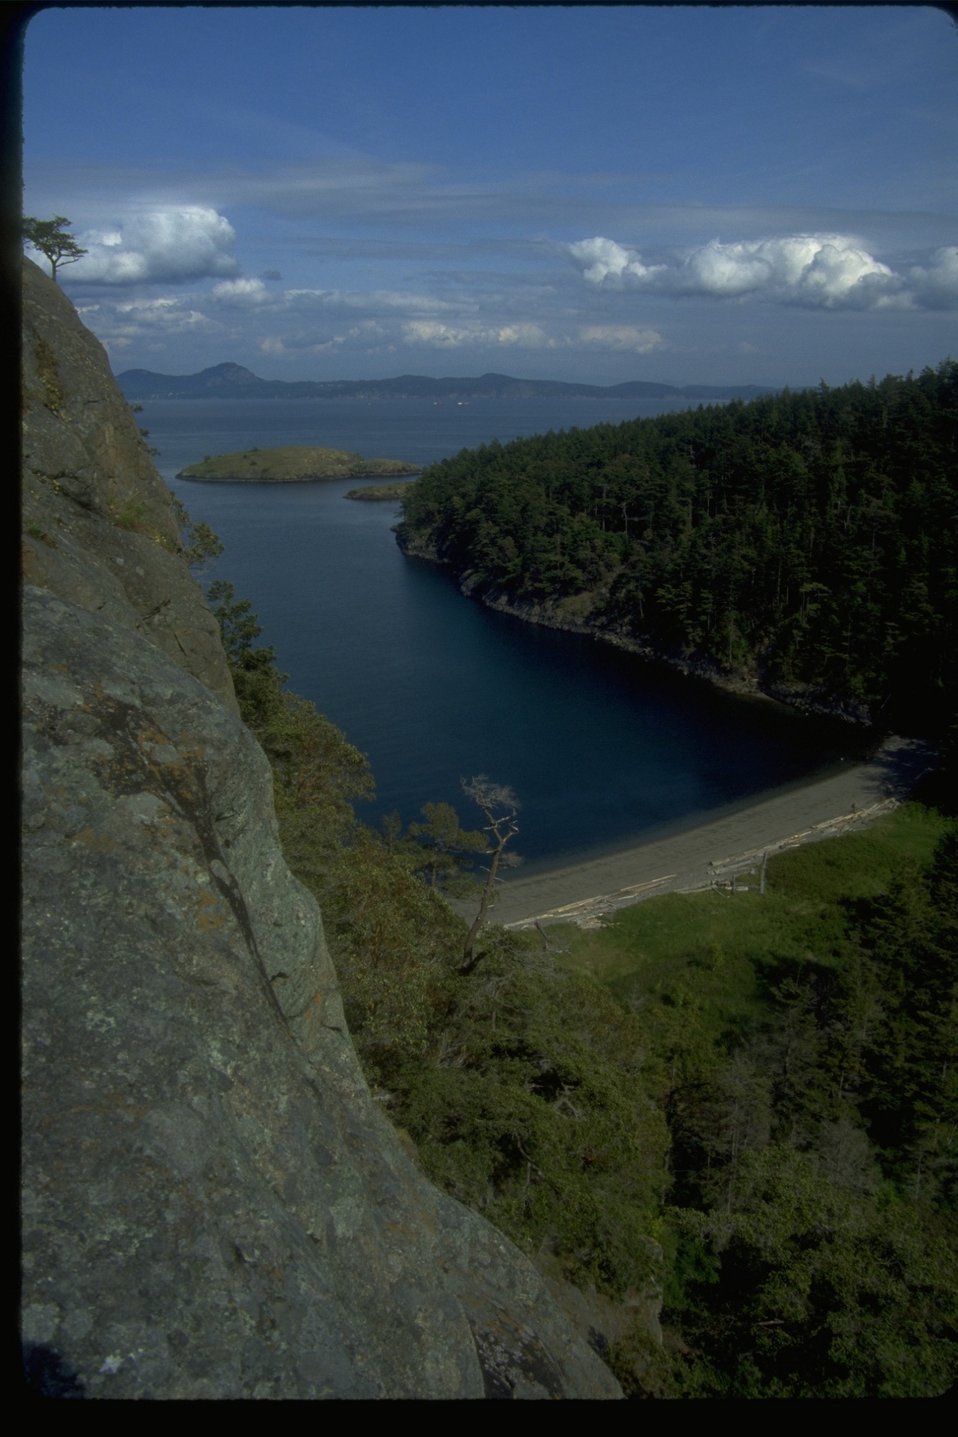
Watmough Bay on Lopez Island in San Juan County, Washington.